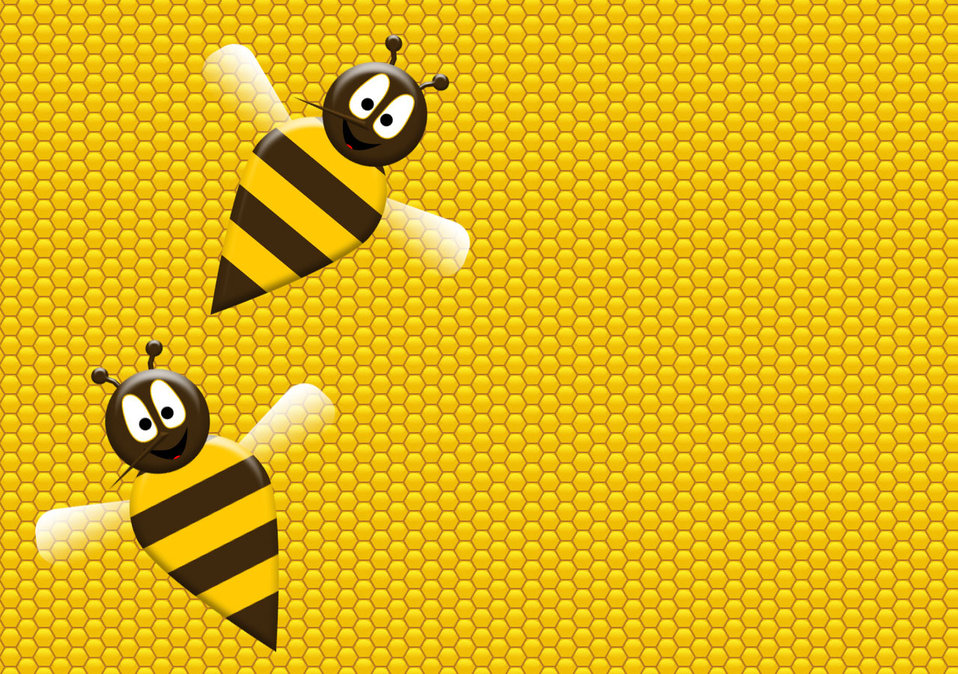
Bees

Two bees on honeycomb.